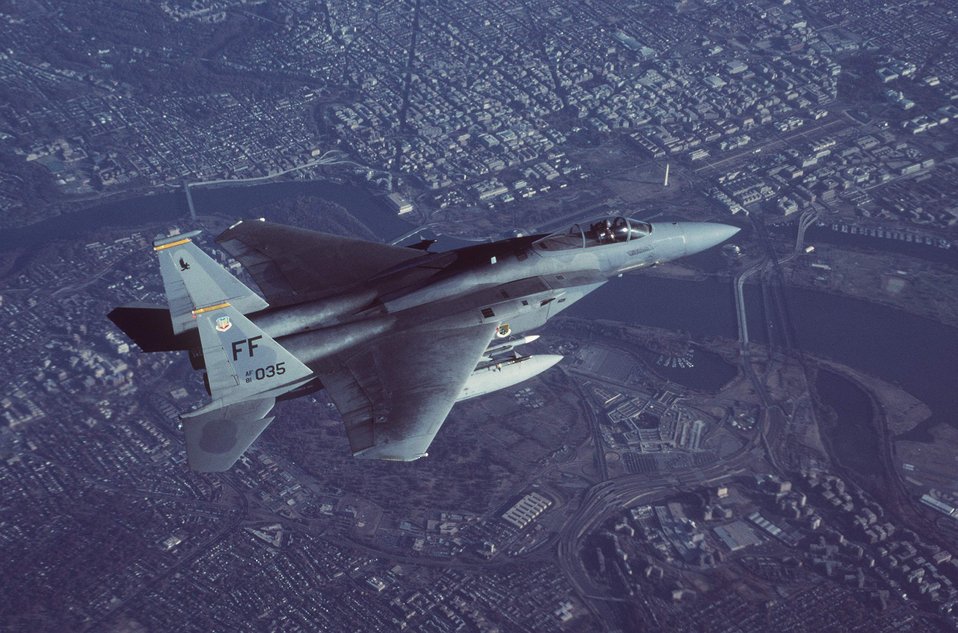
Eagle eyes

OPERATION NOBLE EAGLE -- An F-15C Eagle from Langley Air Force Base, Va., flies over Washington during an early morning combat air patrol mission in support of Operation Noble Eagle. Operations Noble Eagle and Enduring Freedom are not only a joint U.S. campaign, they are combined campaigns. Coalition allies have flown nearly 1,000 missions, highlighting international resolve in the war on terrorism. NATO partners deployed forces to the US for the first time to help defend American air space.